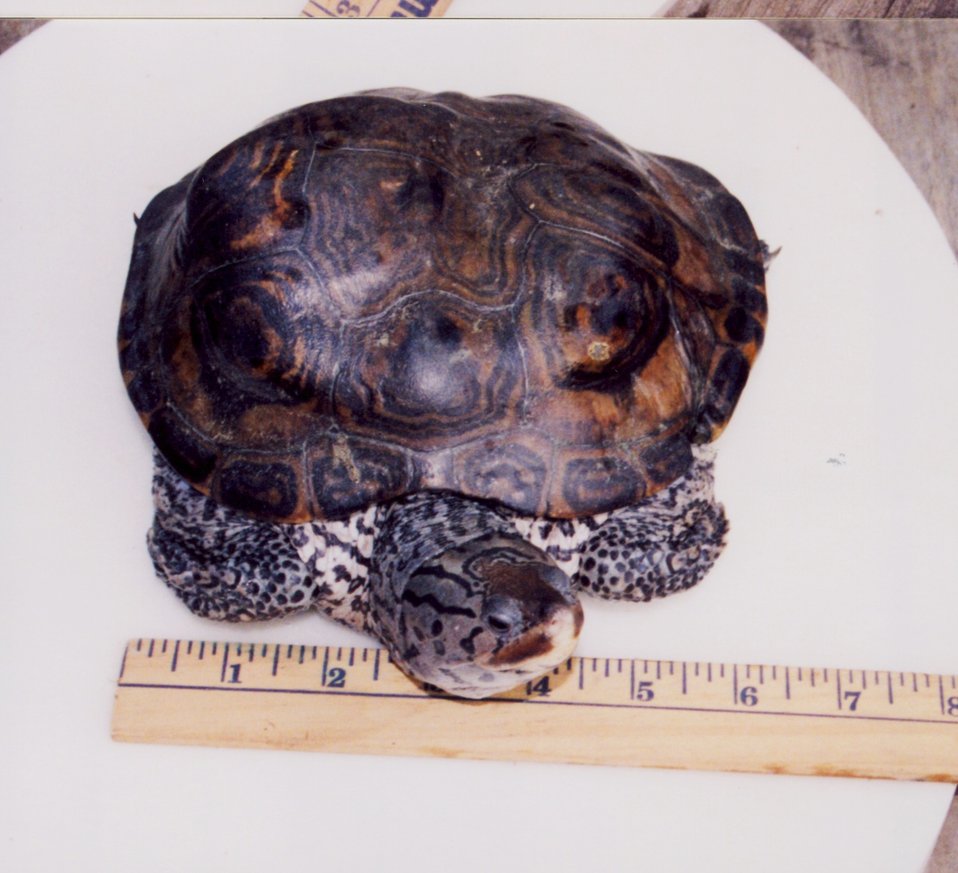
Diamondback terrapin with abnormal growth pattern